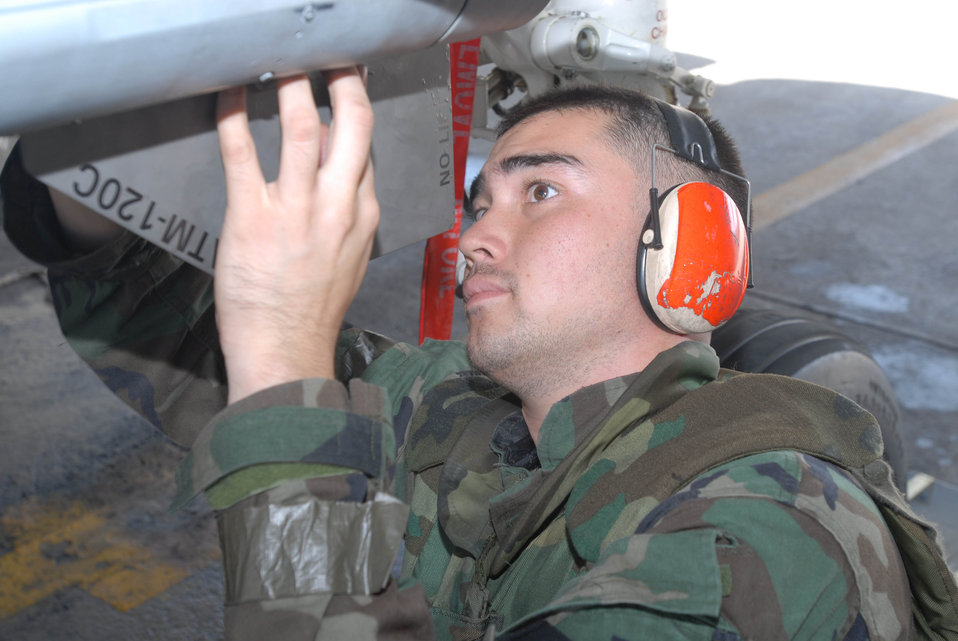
Weapon-loading warriors

Senior Airman Christopher Kratz adjusts an AIM 120 air-to-air missile on an F-15 Eagle during an combat capability exercise Oct. 18 at Kadena Air Base, Japan. The 18th Wing exercise from Oct. 13 to 19 tested the wing's ability to respond to a wartime situation. Airman Kratz is assigned to the 18th Aircraft Maintenance Squadron.